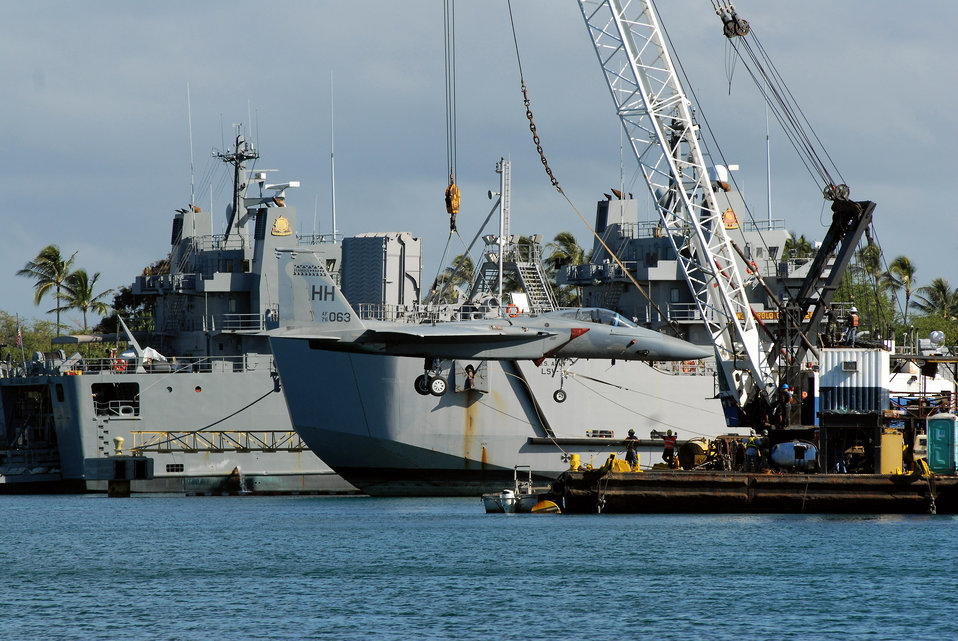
Flying low

An F-15 Eagle gets a lift from a barge crane for its vogue to the Pacific Aviation Museum Pearl Harbor on Ford Island in Hawaii Aug. 26 at the cargo pier at Hickam Air Force Base, Hawaii. The aircraft was from the 199th Fighter Squadron of the Hawaii Air National Guard.